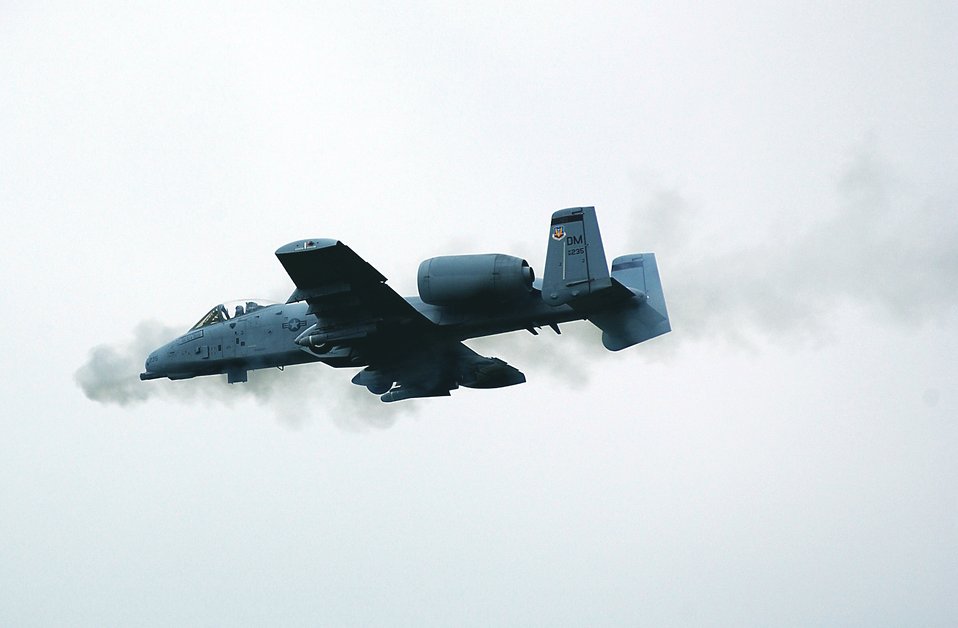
Hawgsmoke 2004

ALEXANDRIA, La. -- An A-10 Thunderbolt II aircraft fires its 30mm GAU-8A seven barrel gatling gun on targets at Clairborne Bombing and Gunnery Range in support of Hawgsmoke 2004, a biannual A-10 bombing and tactical gunnery competition. Severe weather canceled the competition April 30.